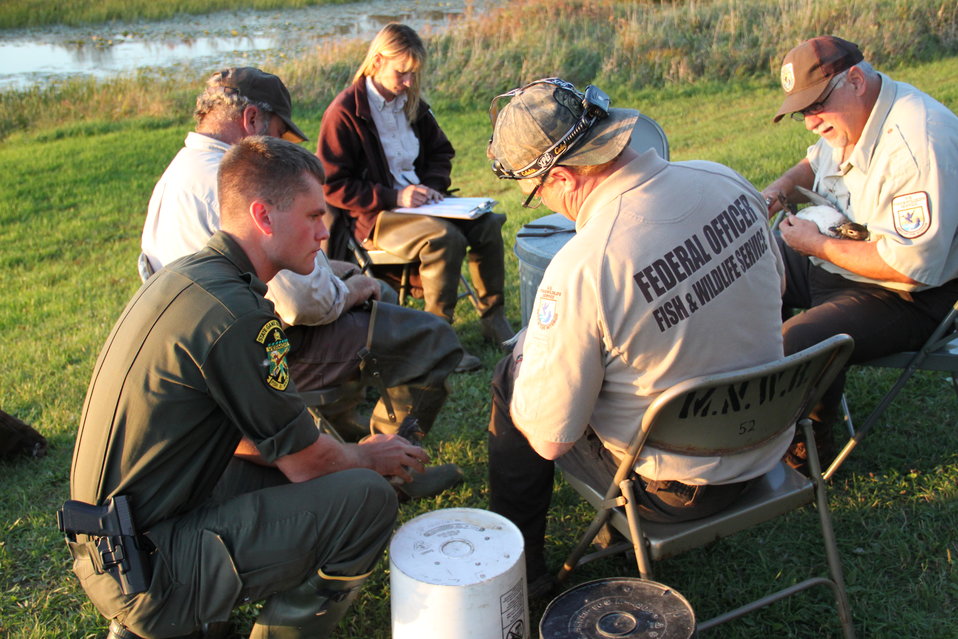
Waterfowl Banding September 2012

Missisquoi National Wildlife Refuge and VTFWD personnel banding waterfowl.